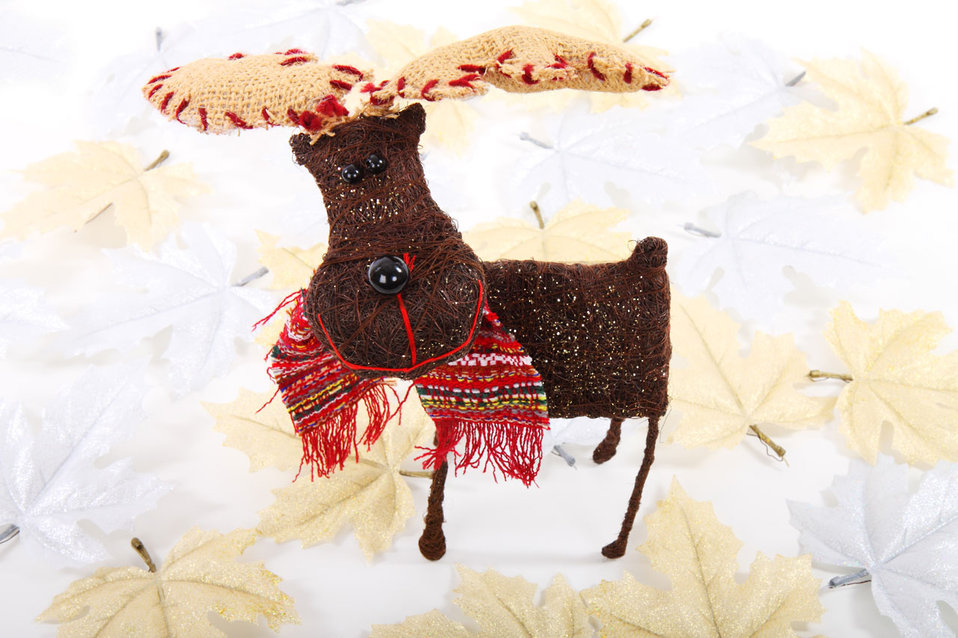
Reindeer in leaves

Reindeer in silver and golden leaves.